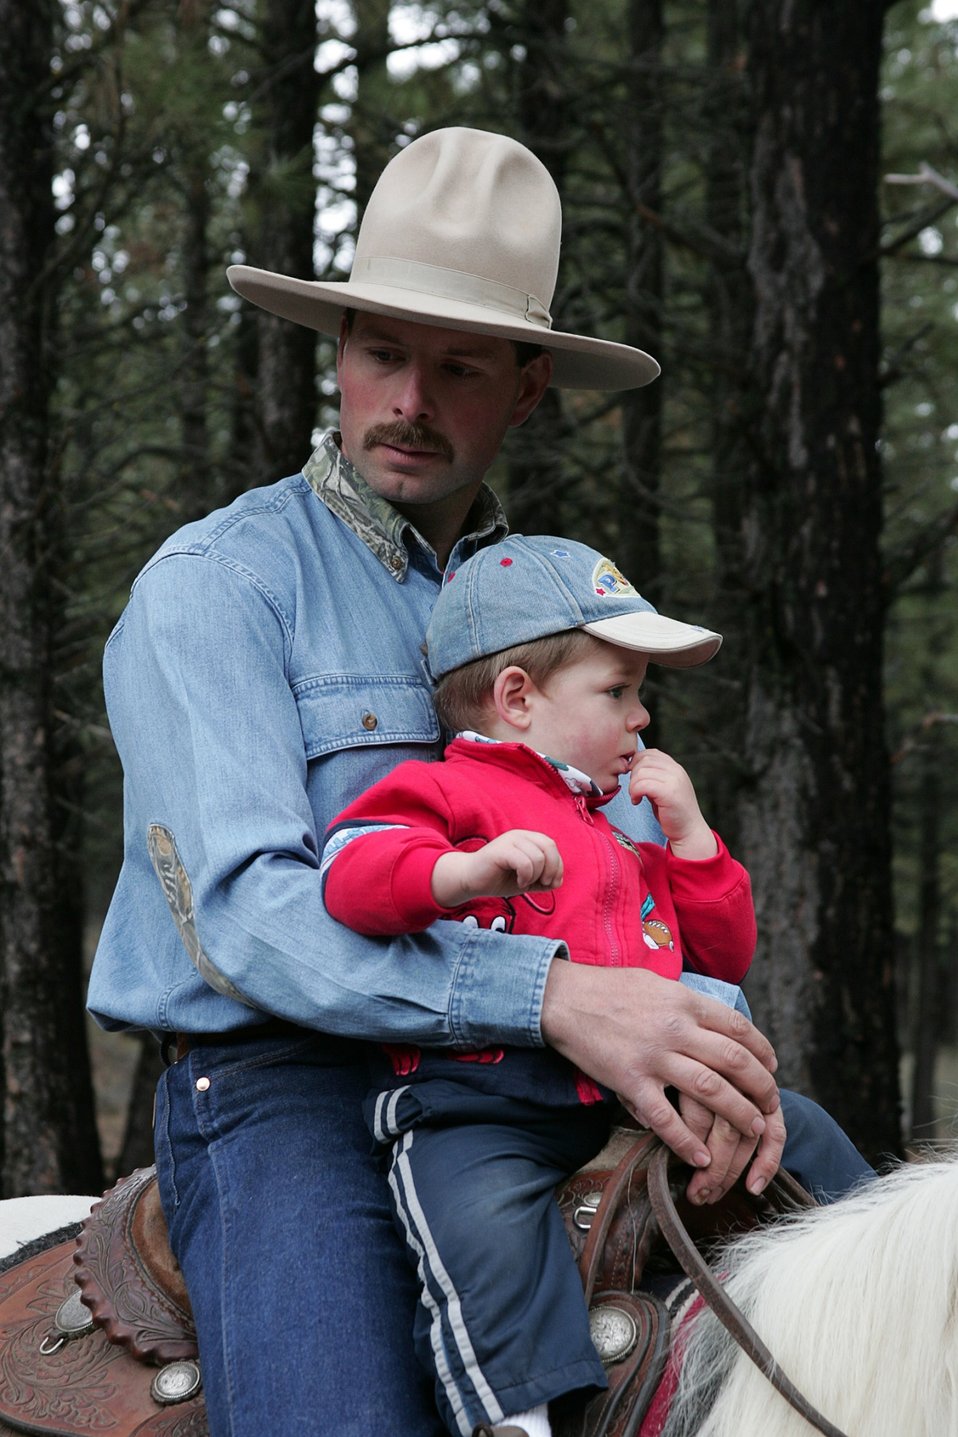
Horse Trainer, Rich Lauman and his son sit ontop of Sage while Rich talks with High Desert Museum visitors about training wild horses.